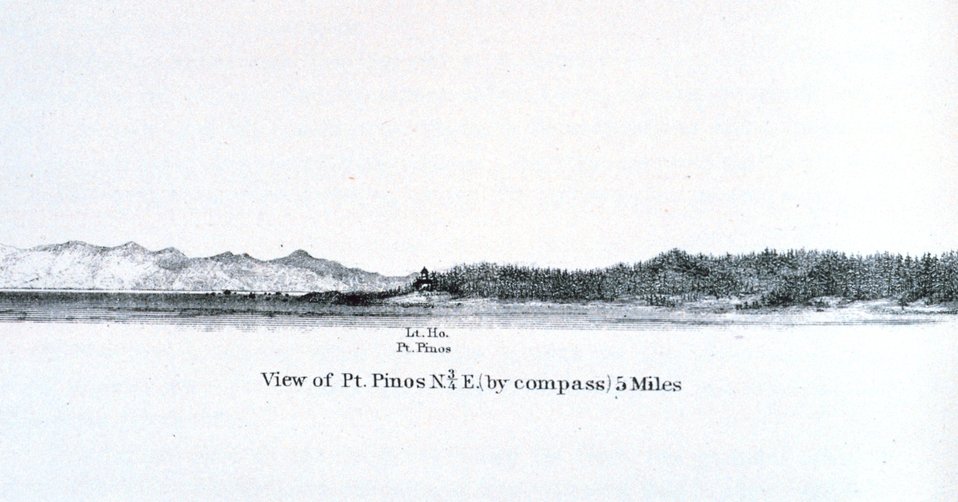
Point Pinos and the Point Pinos Lighthouse as seen from offshore. This is at the southern extent of Monterey Bay. In: Pacific Coast. Coast Pilot of California, Oregon, and Washington Territory . By George Davidson, 1869. P. 45. Library Call Number VK947.D4 1869.